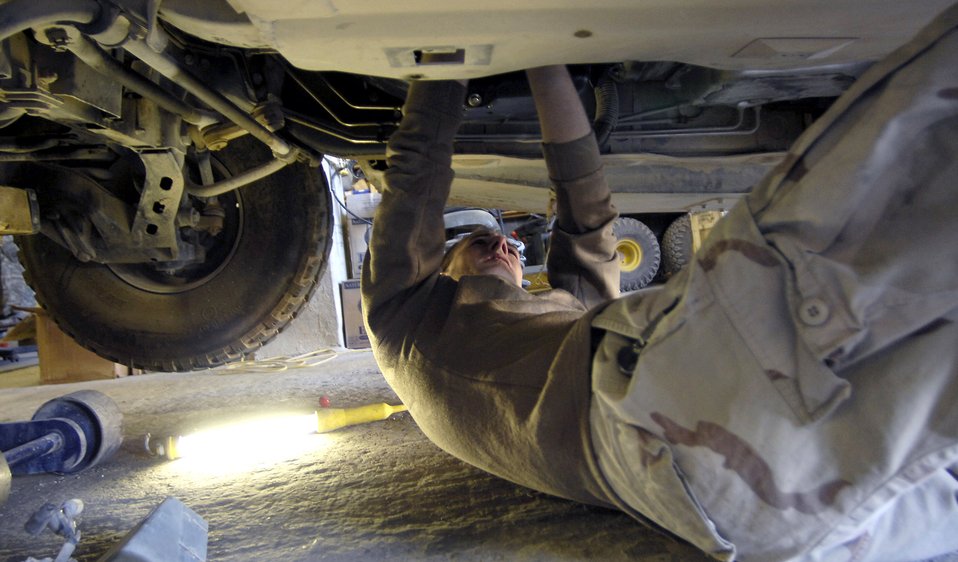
'In-lieu-of' Airmen keep Army rolling along

Staff Sgt. Joel Bonnett works on the transfer case of a Humvee Nov. 1 at forward operating base Lagman, Afghanistan. Sergeant Bonnett is a vehicle maintenance technician filling a 365-day Army 'in-lieu-of' tasking. Sergant Bonnett is deployed from Fort Riley, Kans.